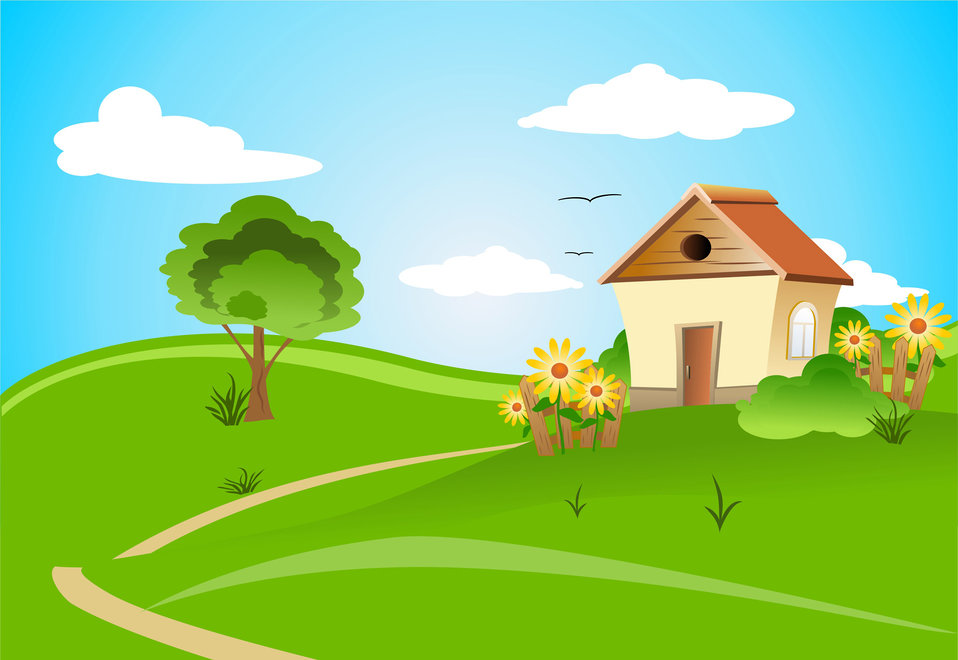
The house in the field

Vector background with a house in the.